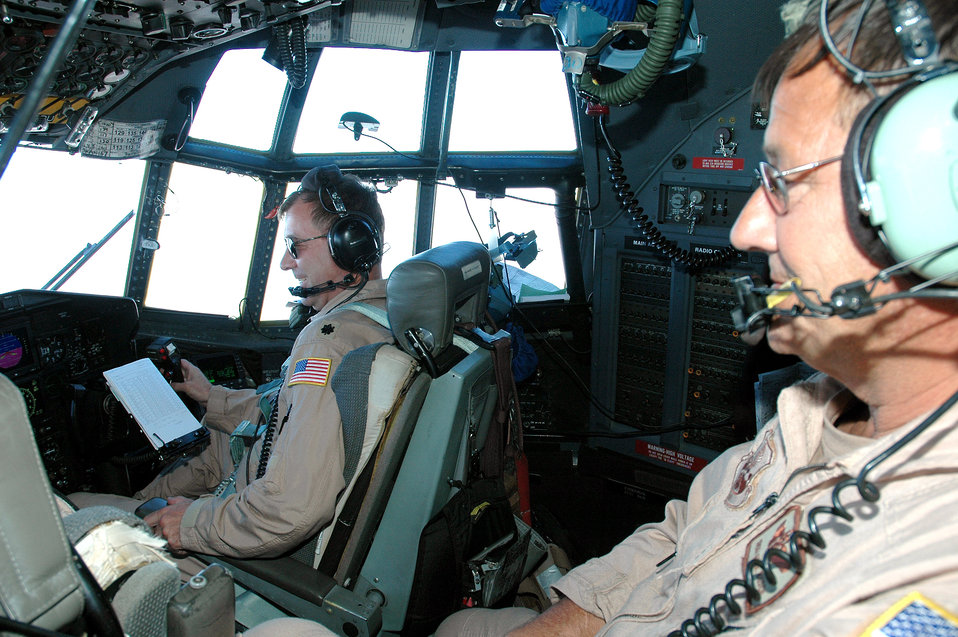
Operation Iraqi Freedom

SOUTHWEST ASIA (AFPN) -- Senior Master Sgt. Eugene Busch looks out the cockpit of a C-130 Hercules aircraft during a mission in Iraq. Sergeant Busch is a flight engineer with the 746th Expeditionary Airlift Squadron.